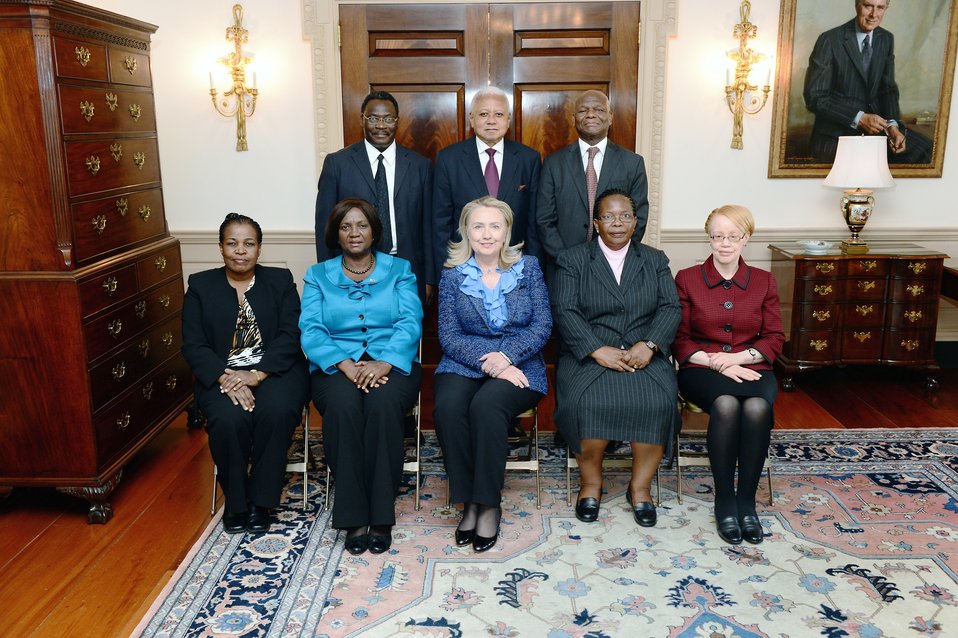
Secretary Clinton Meets With African Court Justices

U.S. Secretary of State Hillary Rodham Clinton meets with African Court Justices at the U.S. Department of State in Washington, D.C., October 23, 2012.